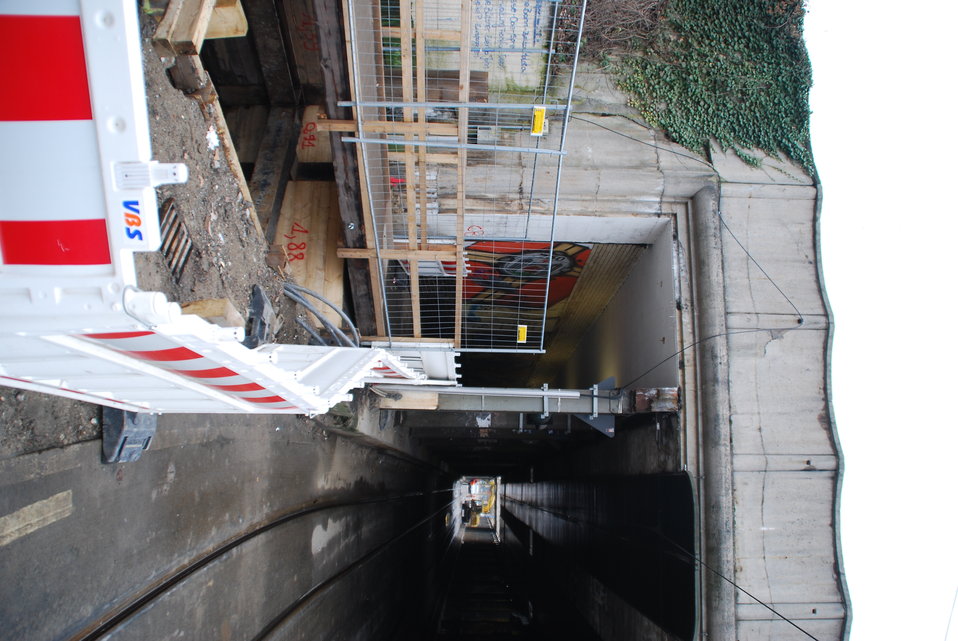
Abriss Bahnhofstunnel Frankfurt (Oder)